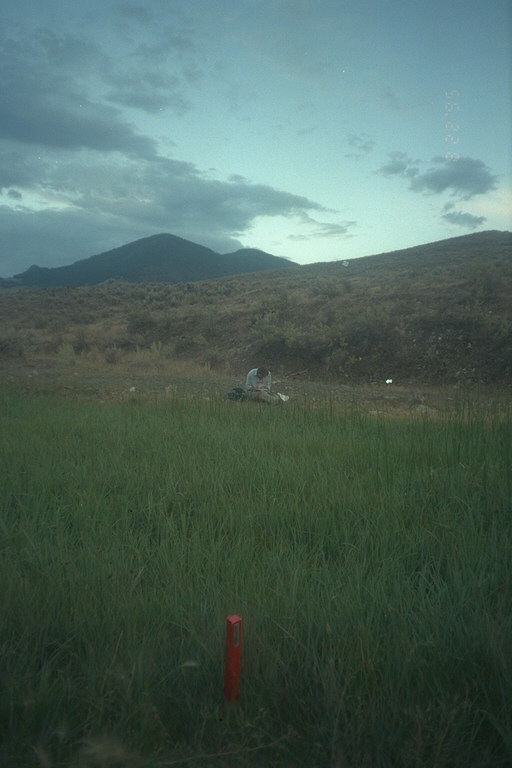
Riparian area Public Lands Salmon Field Office UCSC Upper Columbia Salmon Clearwater District